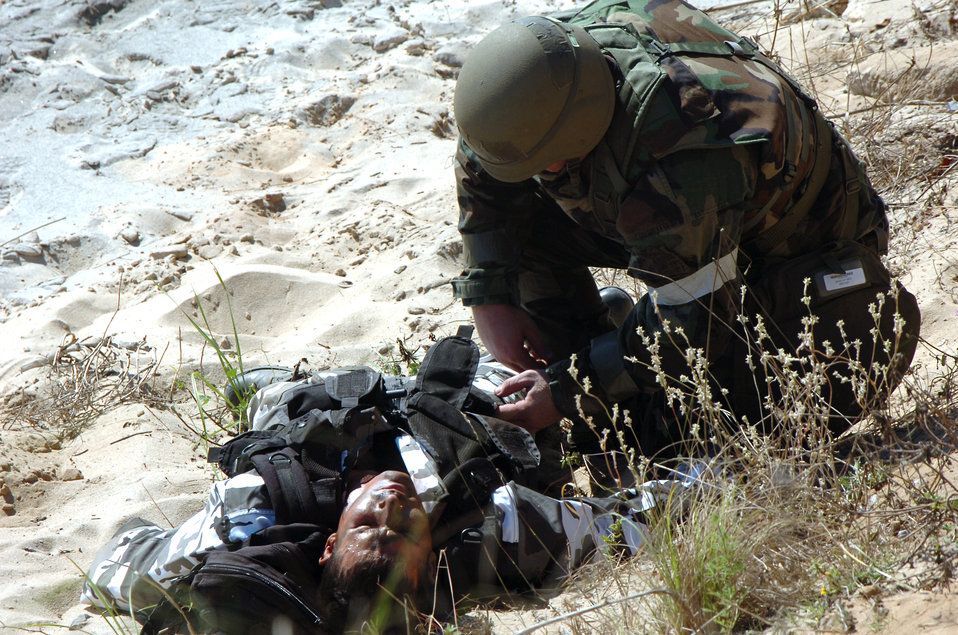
Mock attack

EGLIN AIR FORCE BASE, Fla. -- Senior Airman David Kerr secures a